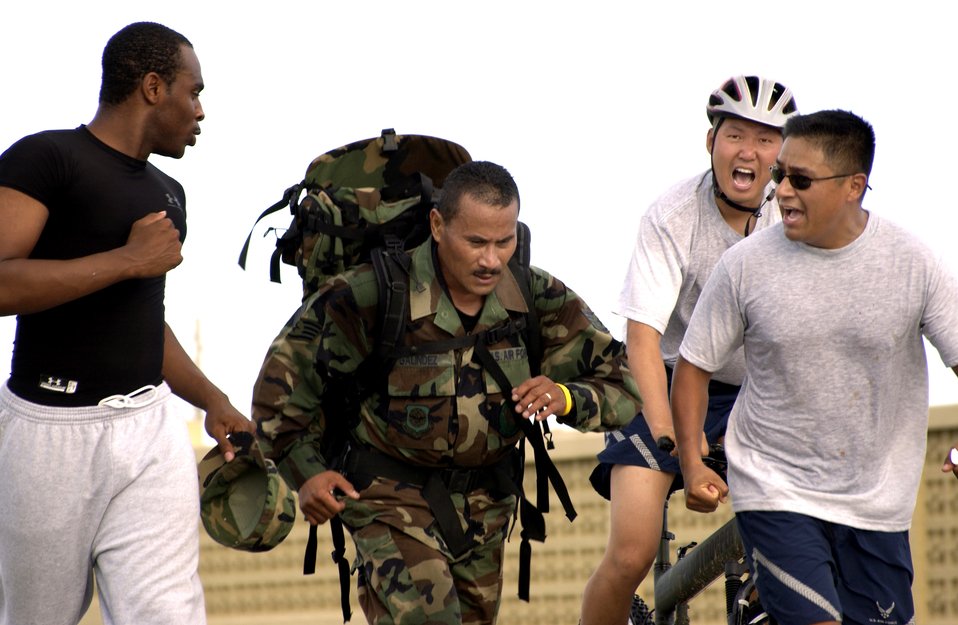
National Police Week

Staff Sgt .Sinforoso Galindez is cheered on by his teammates while he competes in the ruck sack portion of the Quadathlon held during National Police Week on Tuesday, May 16, 2006, at Andersen Air Force Base, Guam. National Police Week (May 13-20, 2006) is being hosted by the 36th Security Forces Squadron.